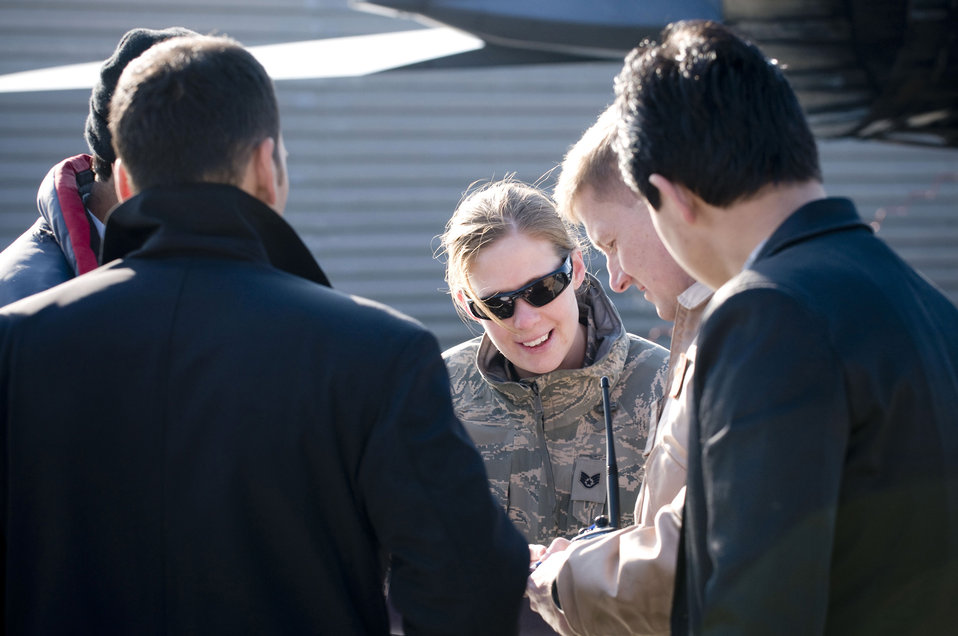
Afghan media learn about close-air support

Staff Sgt. Rachel Martinez provides guidance during an interview between Lt. Col. Derek Oaks and members of the Afghan media Jan. 5 at Bagram Airfield, Afghanistan. Sergeant Martinez is a 455th Air Expeditionary Wing public affairs specialist. Colonel Oaks is an A-10 Thunderbolt II pilot.